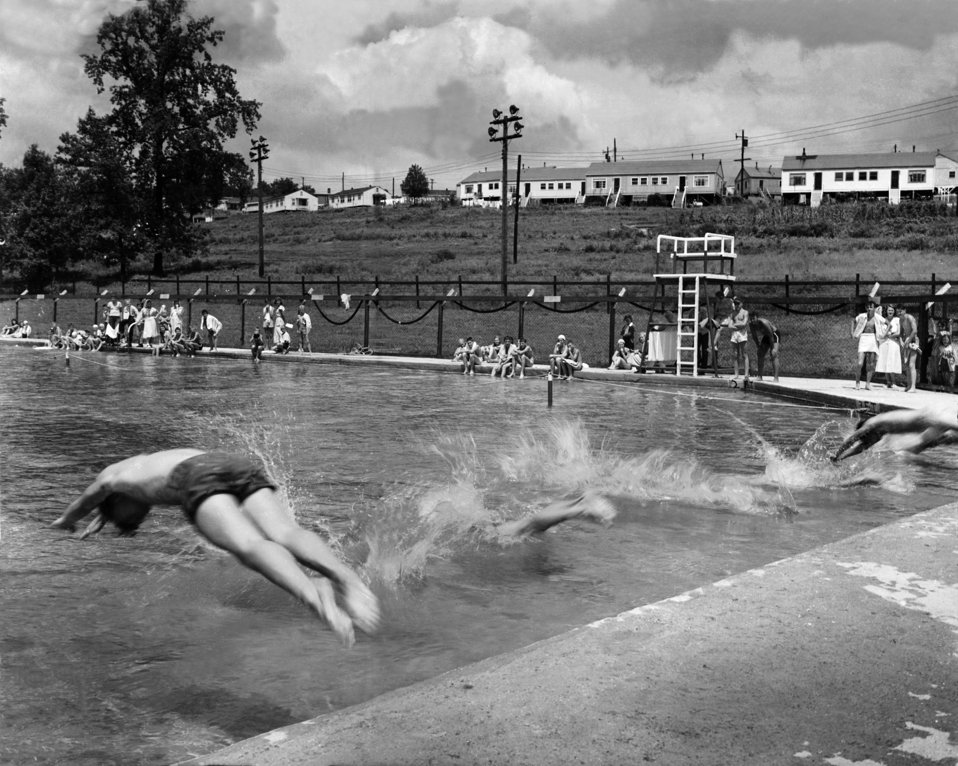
Swim Meet Oak Ridge

005138-7b DOE Photo by Lillian Stokes
Swim start at swim meet at Oak Ridge pool Oak Ridge Tennessee 8/5/1948